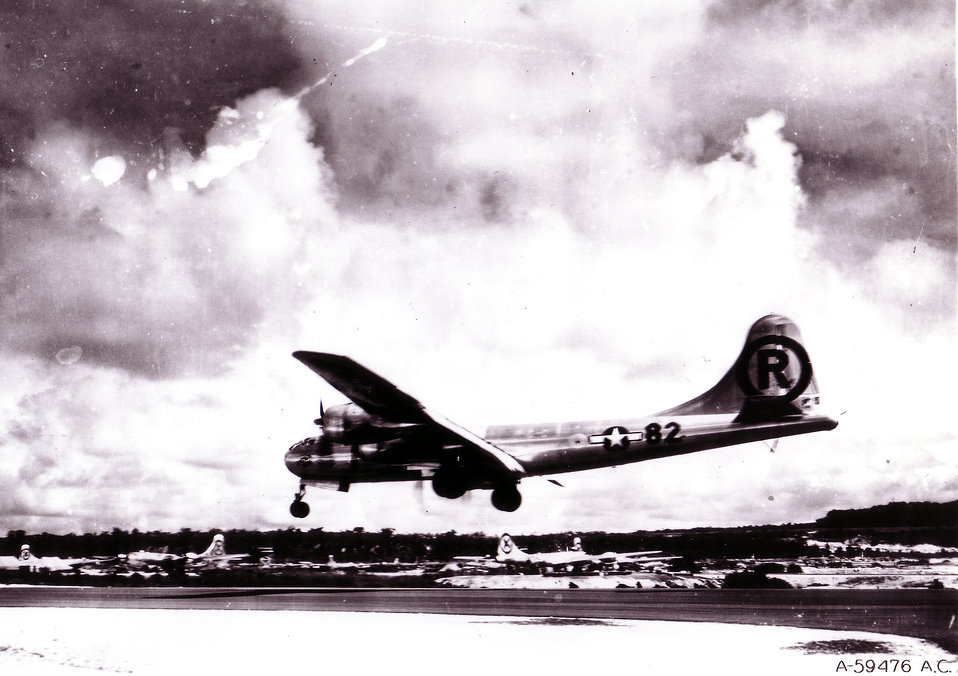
B-29 Superfortress Enola Gay

1940's -- MARIANAS ISLAND -- Boeing B-29 Superfortress